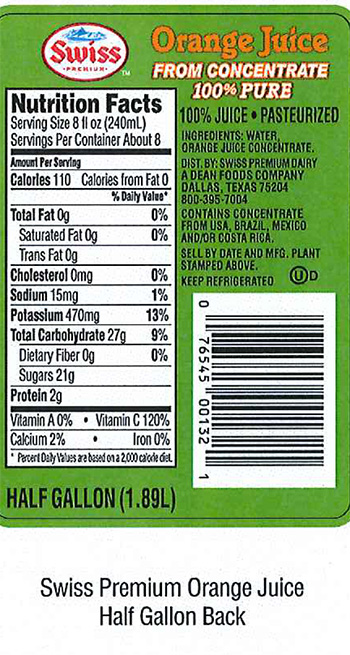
RECALLED – Orange Juice

March 3, 2014 – Product Recall – Lehigh Valley Dairy Conducts Voluntary Recall of Lehigh Valley, Swiss Premium, and Price Chopper Brand Orange Juice Because It May Contain Undeclared Allergen (Milk).